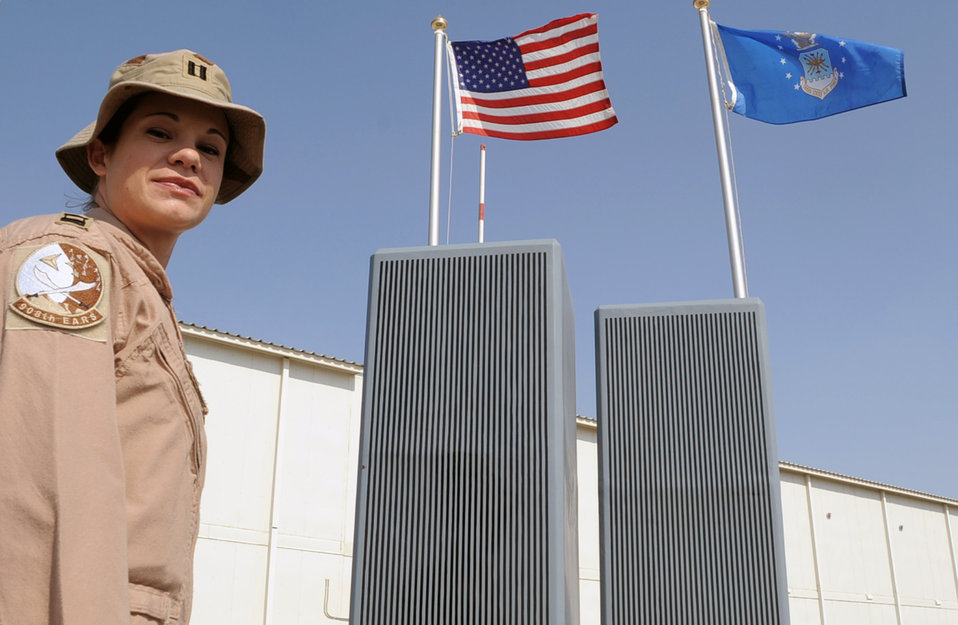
As Travis KC-10 pilot passed 100th combat sortie, Plano native says she was reminded of her thankfulness to serve

Capt. Hillary Wykes, a KC-10 Extender pilot with the 908th Expeditionary Air Refueling Squadron, stands by the 380th Air Expeditionary Wing's Sept. 11, 2001, memorial at a non-disclosed base in Southwest Asia on Jan. 13, 2010. Captain Wykes is a six-year Air Force veteran and recently completed her 100th combat sortie. On Sept. 11, 2001, Captain Wykes was a flight attendant for United Airlines. She said those events changed her life and led to her joining the military and becoming a pilot. Captain Wykes is deployed from the 9th Air Refueling Squadron at Travis Air Force Base, Calif., and her hometown is Plano, Ill.